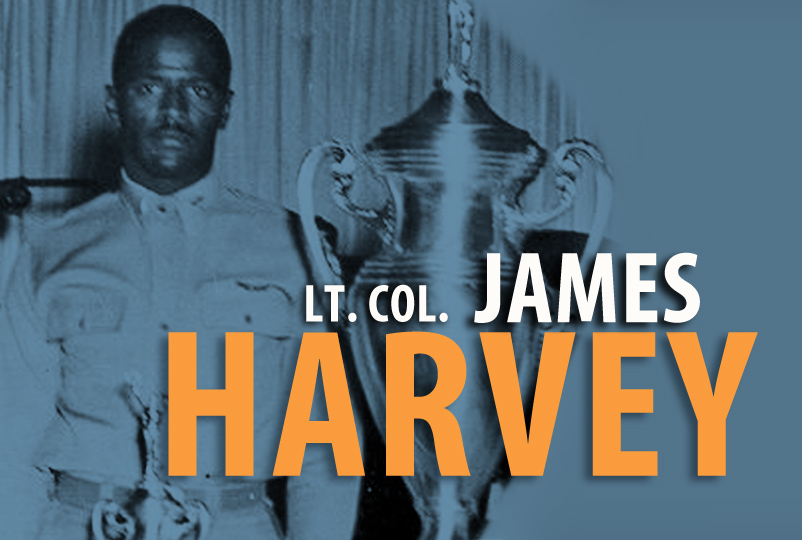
Lt. Col. James Harvey